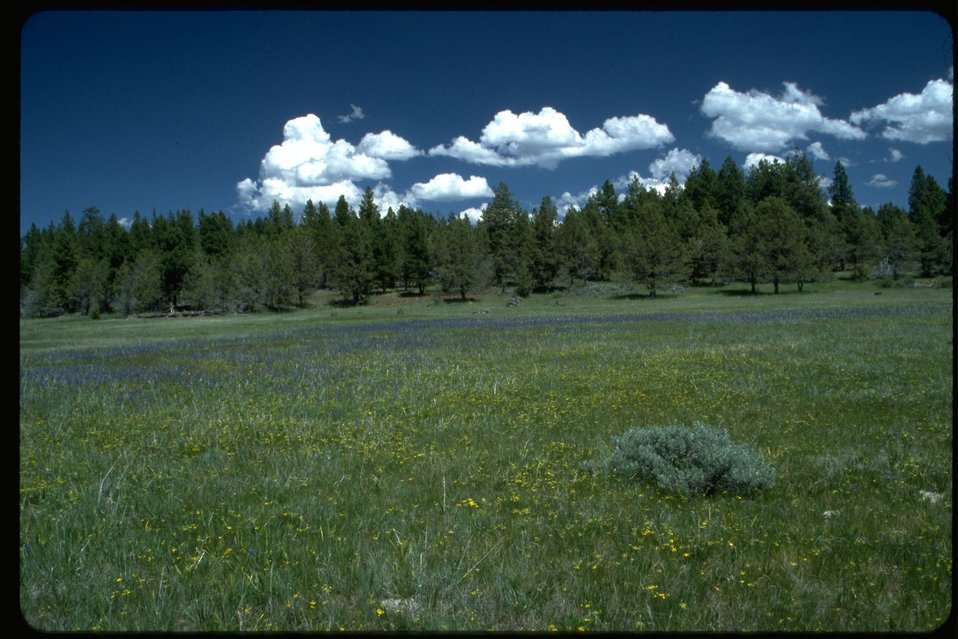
Long shot of Blue Camas site.